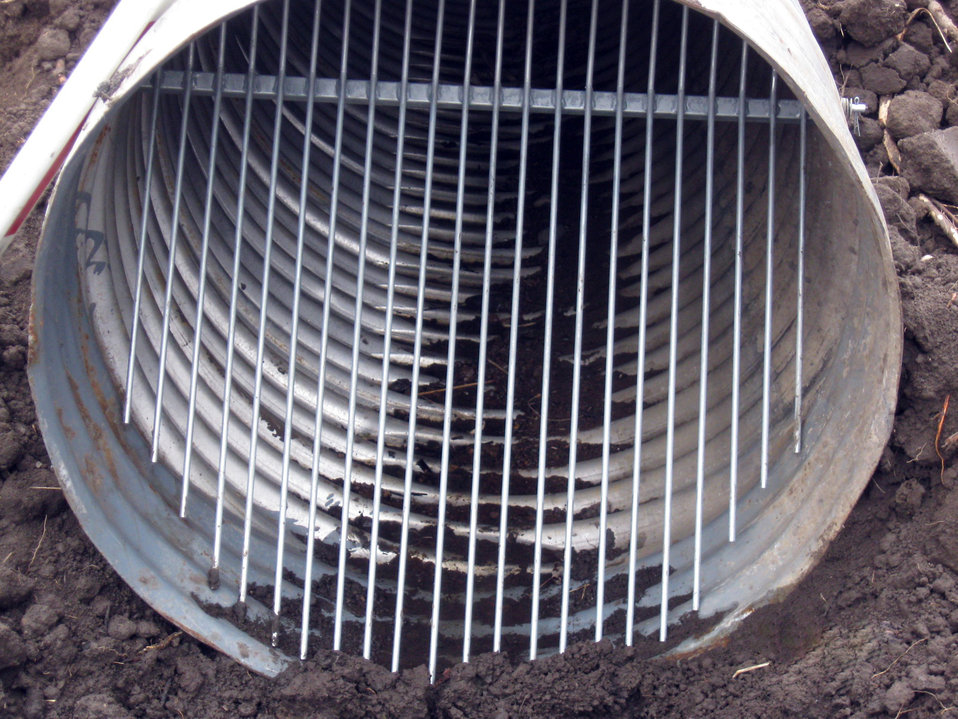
Gate that Allows for Wildlife and Beavers to Pass Through

A swinging grate allows debris and wildlife to pass through pipes in one direction.